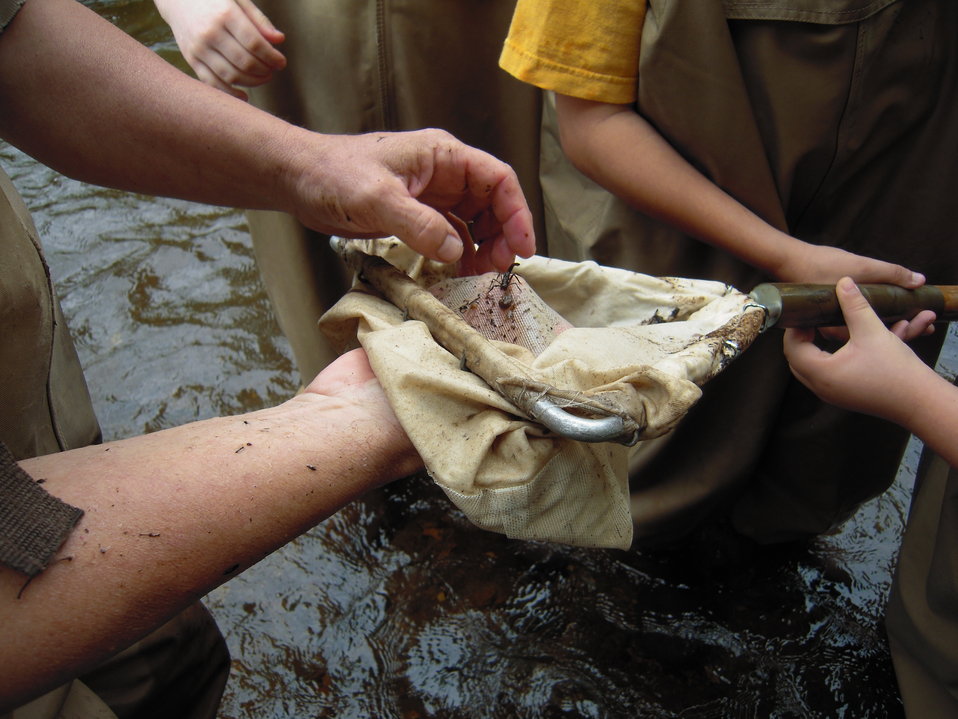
Different species found in the nets